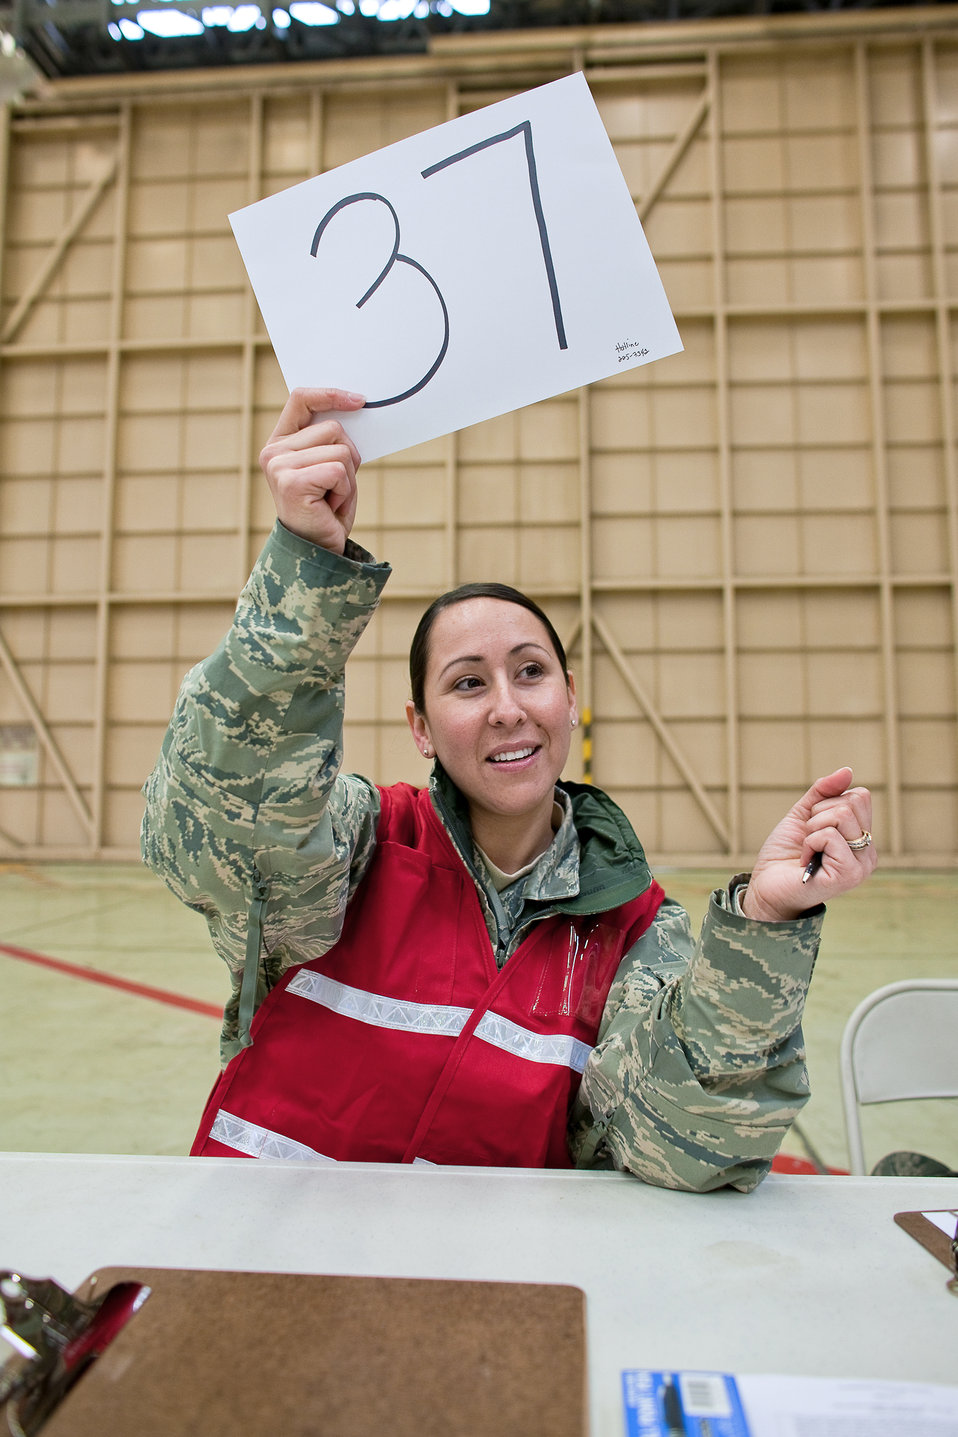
PACOM officials direct distribution of potassium iodide tablets

Staff Sgt. Michelle Romany calls for a customer to pick up potassium iodide tablets March 22, 2011, at Yokota Air Base, Japan. U.S. Pacific Command officials directed distribution of potassium iodide tablets as a precautionary measure. Base officials are stressing there is no indication of increased exposure at Yokota AB. Sergeant Romany is assigned to the 374th Surgical Operations Squadron.